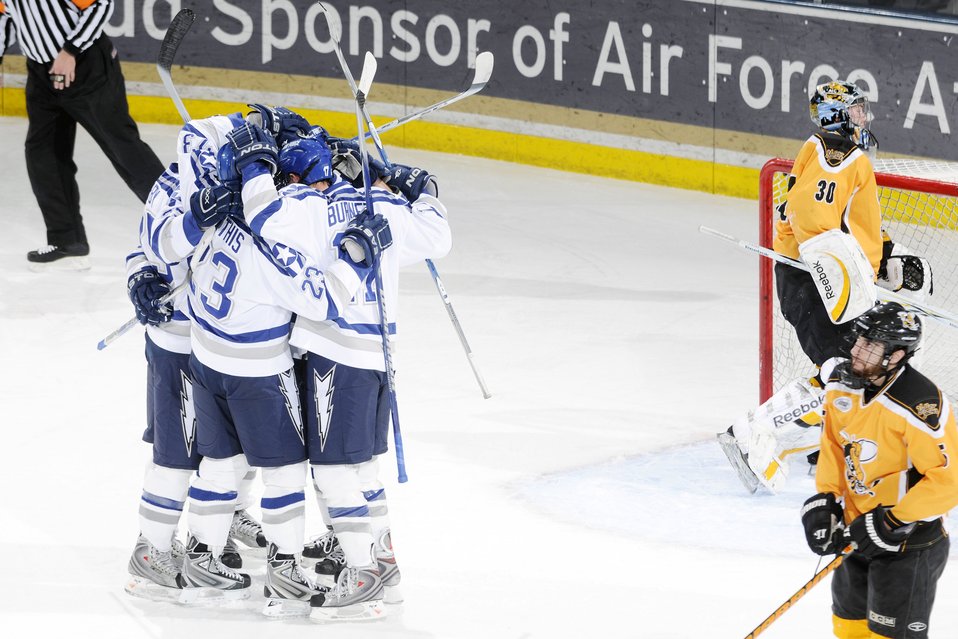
Falcons sweep hockey series

Members of the Air Force hockey team celebrate after a goal during the first period of the Falcon's game against American International College at the Cadet Ice Arena Dec. 5, 2009. Air Force defeated AIC 6-2.